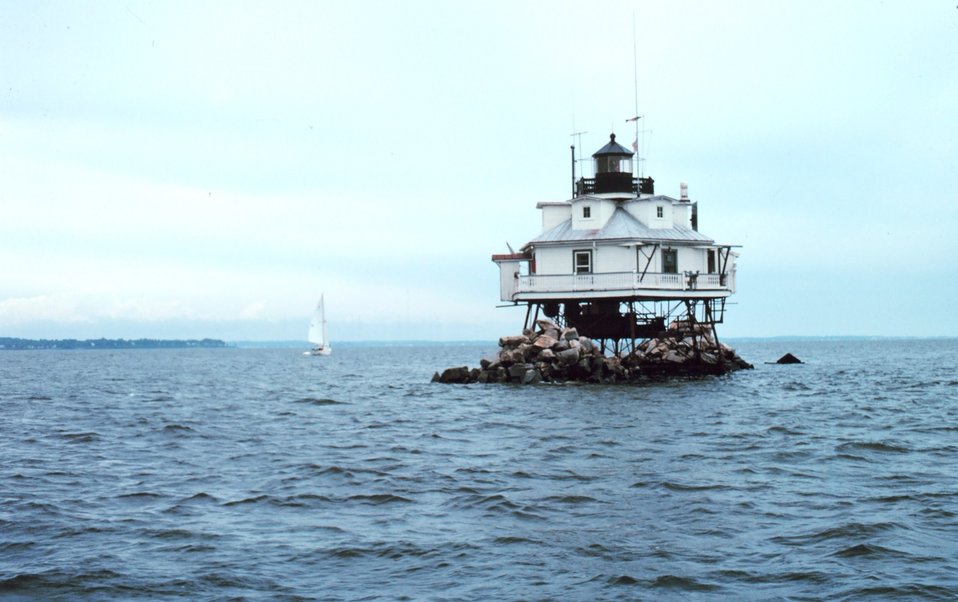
The Thomas Point Lighthouse just north of the mouth of the South River below Annapolis